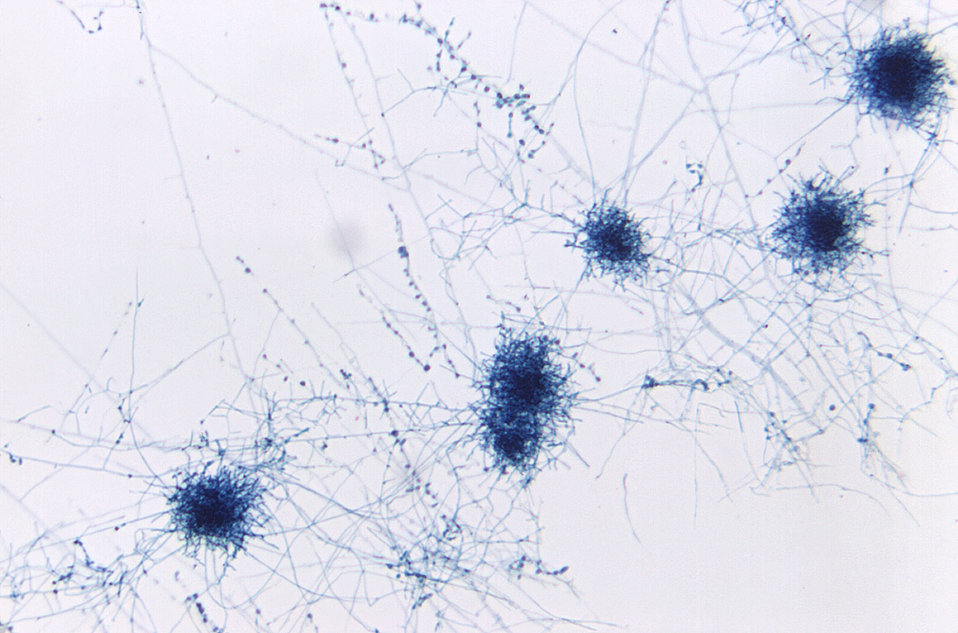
Under a low magnification of only 42X, this photomicrograph revealed some of the ultrastructural morphology displayed by six developing young Gymnoascus demonbreunii cleistothecia, including the tightly-woven hyphae of this fungus.